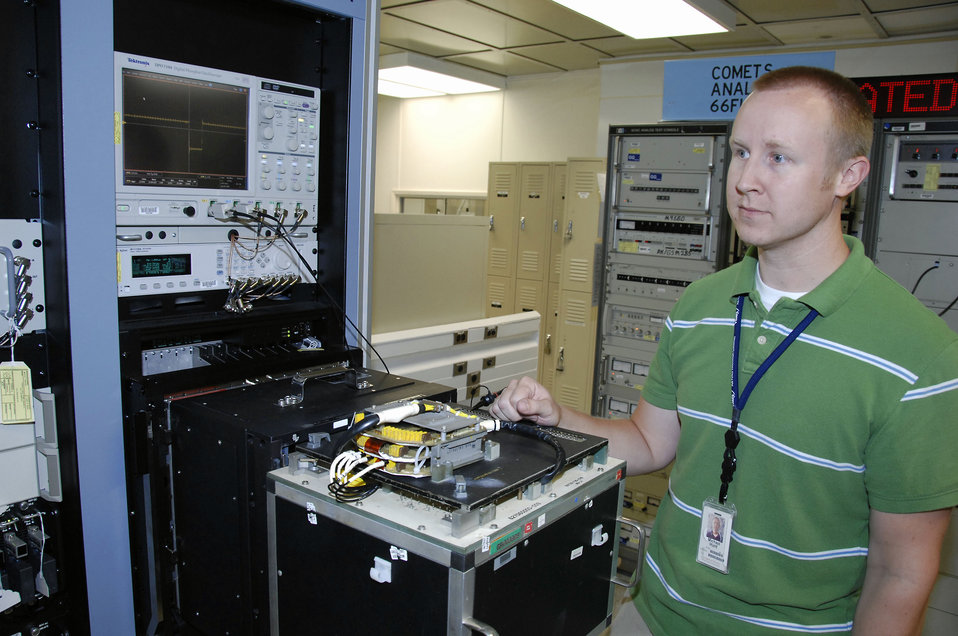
Air Force depot begins use of automatic test station

Michael Hunt prepares to test a decoder assembly from an A-10 Thunderbolt II using the new Versatile Depot Automatic Test Station. The new system is a significant improvement over the older systems currently being used at Air Force depots. Mr. Hunt is a Warner Robins Air Logistics Center lead test station operator at Robins Air Force Base, Ga.